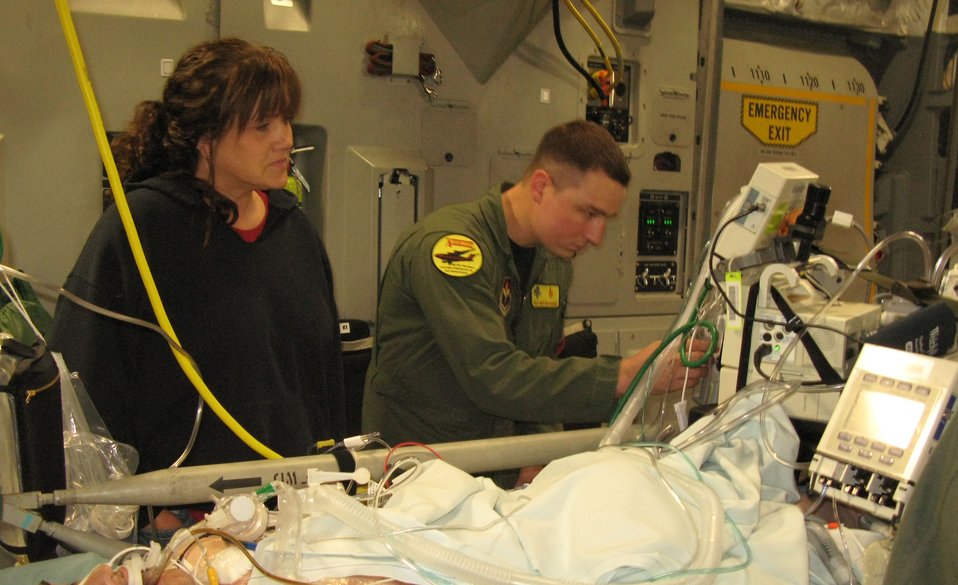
Air Force evacuation team carries wounded warriors home

Kelli Pedersen looks on as Staff Sgt. Matthew Worsham, a respiratory technician with the critical care air transport team, prepares her son, Army Spc. Dustin Morrison, for an aeromedical evacuation flight from Ramstein Air Base, Germany, April 26, 2011, for follow-on care at Walter Reed Army Medical Center in Washington, D.C.